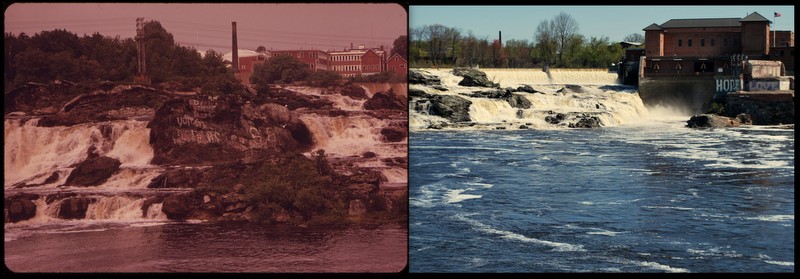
Great Falls, Androscoggin River, Lewiston-Auburn, ME 1973 and 2012

'Then' Documerica Photo: June, 1973 Great Falls and Part of the City of Lewiston Seen from the Auburn Side of the Androscoggin River by Charles Steinhacker.

'Now' State of the Environment Photo: April, 2012 Photo by Munroe Graham.

Join in at www.flickr.com/groups/ourenvironment

Charles Steinhacker was one of nearly one hundred photographers hired for DOCUMERICA. His assignment took him to Maine in June 1973 and while there he photographed evidence of water pollution from textile and paper mills along the Androscoggin River.